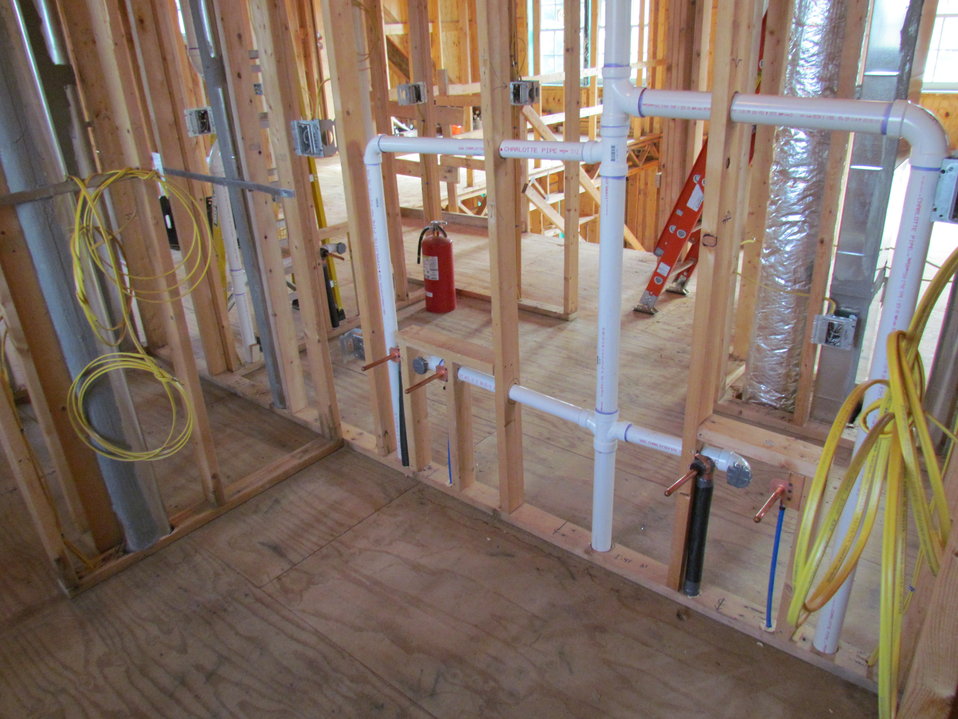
Net-Zero Energy Residential Test Facility – Photo showing plumbing in master bathroom located on second floor of facility.